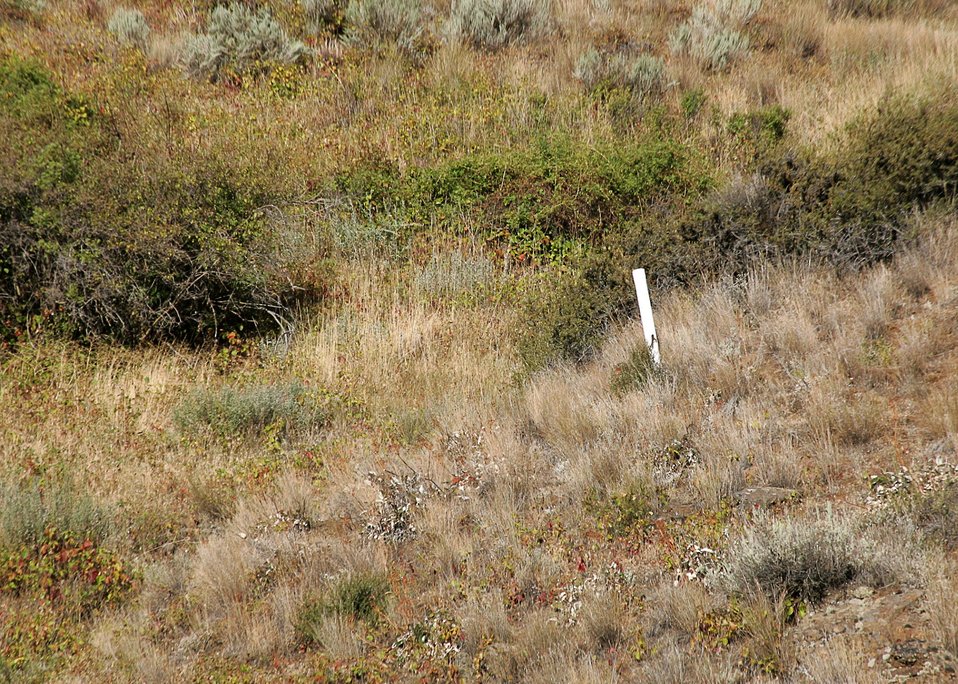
Mining Claim along the Snake River Backcountry Byway.